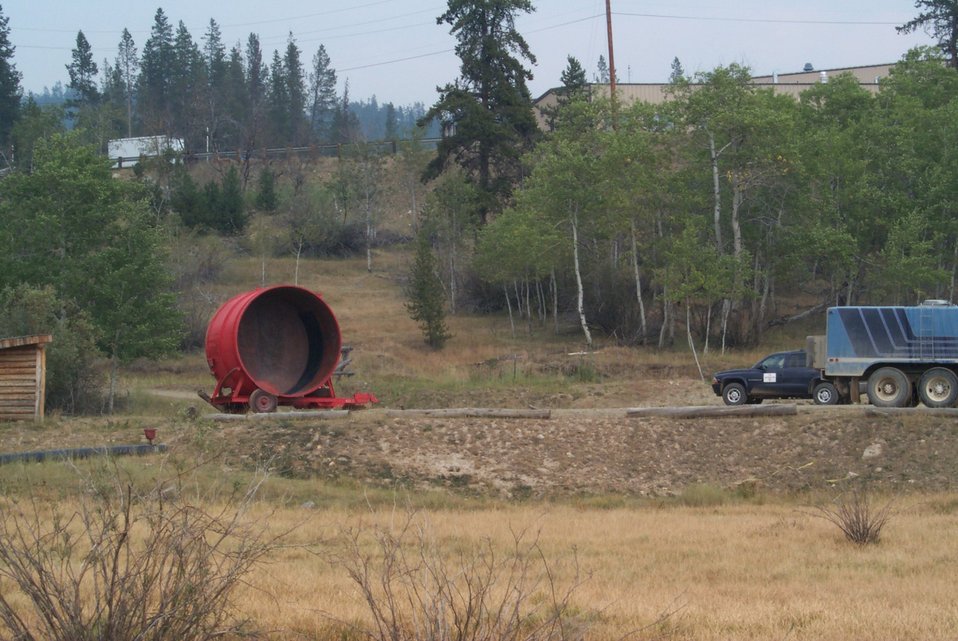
Water container Fire Clearwater Fire Salmon Field Office USRD Upper Snake River District